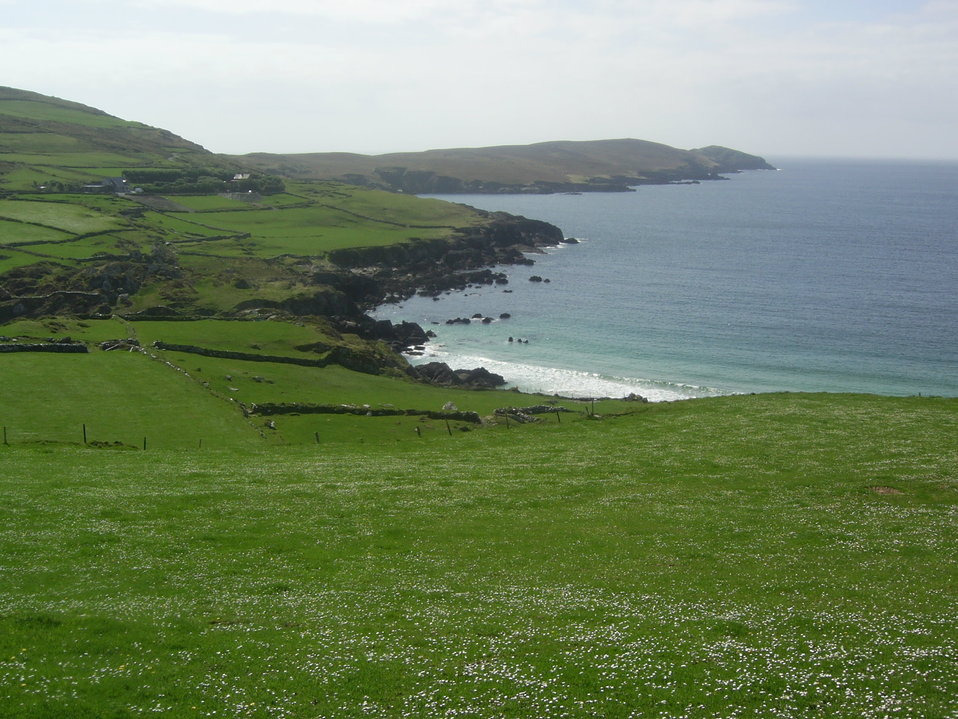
Beara Peninsula